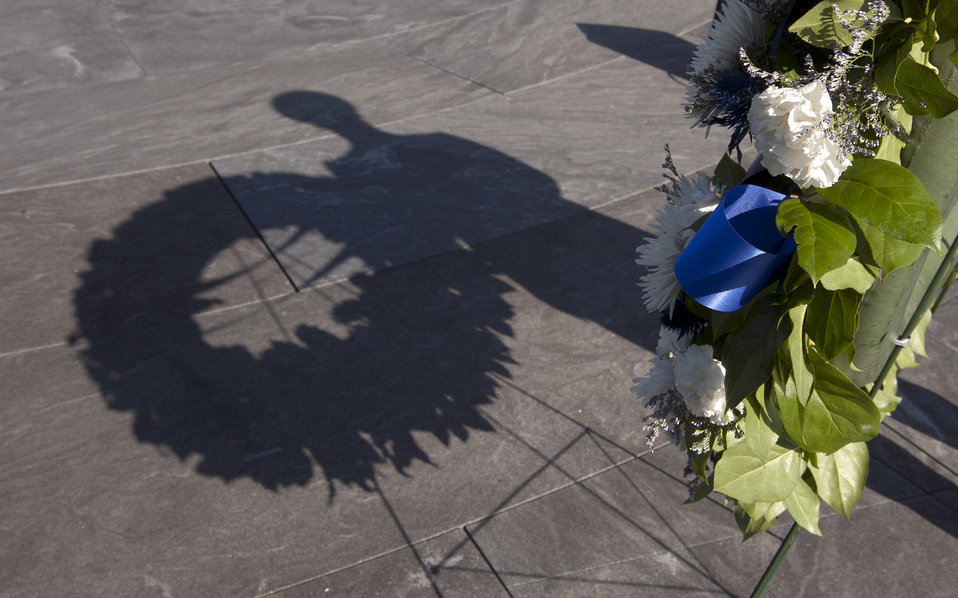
Veterans Day

Airman 1st Brian O'Conner, from the Air Force Honor Guard, creates a shadow on the ground as he stands ready to assist during a wreath laying ceremony at the Air Force Memorial in observance of Veterans Day on Nov. 11, 2012, in Arlington, Va. The ceremony was co-hosted by the Air Force Association and Air Force Sergeants Association; Secretary of the Air Force Michael Donley and Air Force Vice Chief of Staff Larry O. Spencer attended.